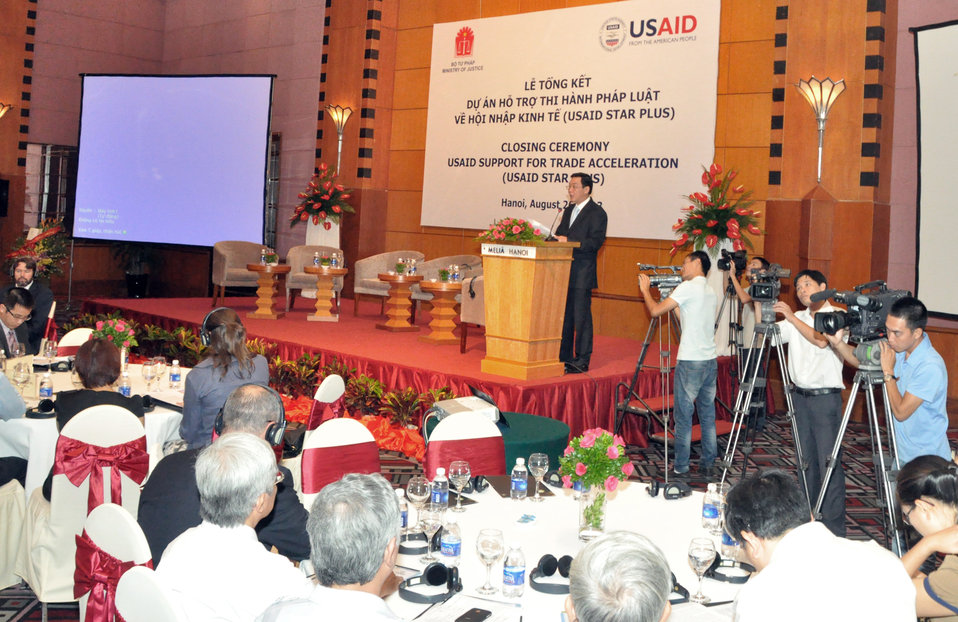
USAID's Support for Trade Acceleration Project (USAID STAR Plus) Closing Ceremony

Hanoi, August 26, 2013.